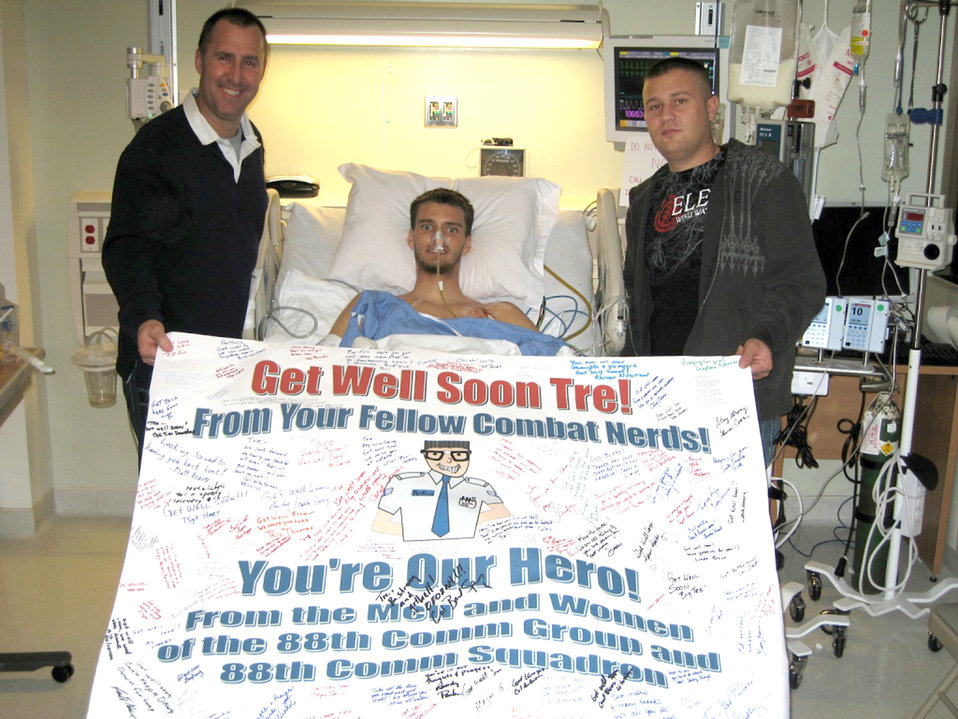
Doctors perform groundbreaking surgery at Walter Reed

Senior Airman Tre Porfirio poses with Lt. Col. Rick Johns and Senior Airman Scott Cross in his recovery room at Walter Reed Army Medical Center, Md., after receiving 11 surgeries to reconstruct his abdomen. While serving with an Army unit in Afghanistan, Airman Porfirio was shot three times in the back by an insurgent Nov. 21. Airmen Porfirio and Cross are assigned to the 88th Communications Squadron at Wright-Patterson Air Force Base, Ohio. Colonel Johns is the 88th CS commander.